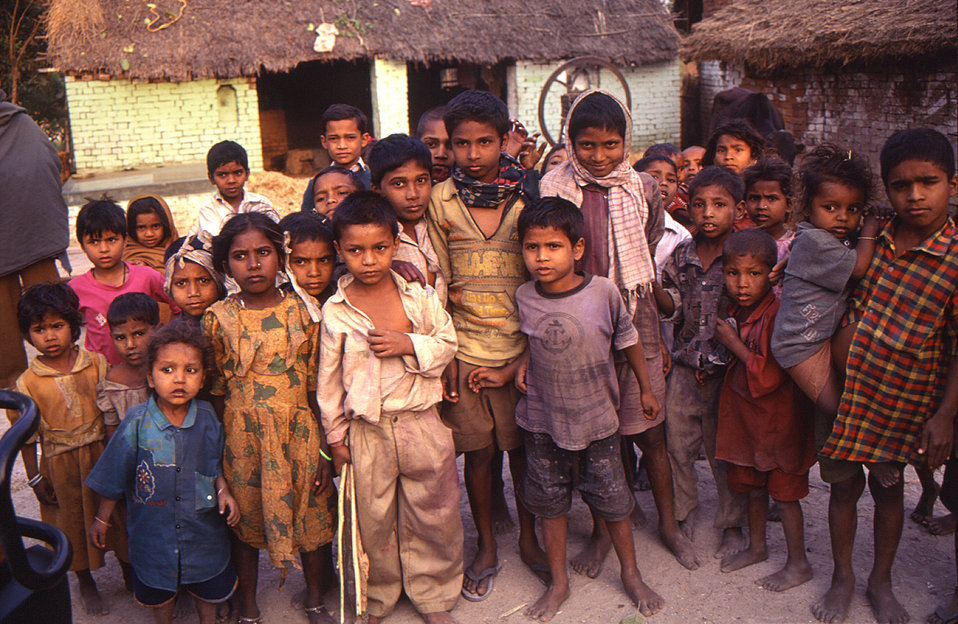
This 2000 image depicted a group of Indian children gathered together in their village located in the state of Uttar Pradesh. The photograph was provided by Chris Zahniser, B.S.N., R.N., M.P.H., a STOP Transmission of Polio (STOP) immunization initiative team member and photographer. Children were frequently the first to greet visitors in the rural areas, with older brothers and sisters often accompanied by their younger siblings. This was one of a number of images provided by Chris Zahniser, B.S.N., R.N., M.P.H., a STOP Transmission of Polio (STOP) immunization initiative team member and photographer who was assigned to the state of Uttar Pradesh in northern India, and spent three months working in the Districts of Gorakhpur and Deoria.